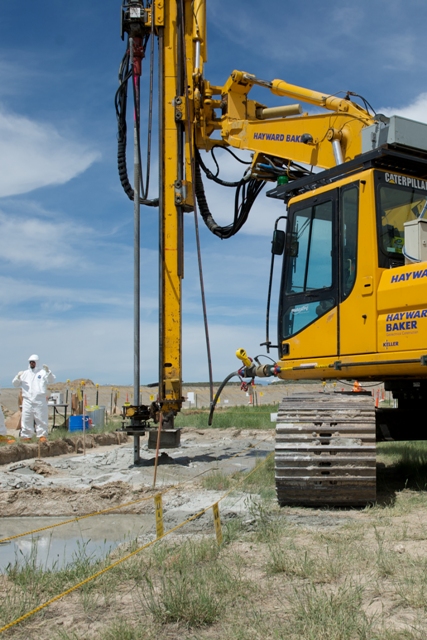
Grouting at INL

A concrete-based grout was injected into 21 locations at the Idaho site to surround buried transuranic waste, thus preventing contaminants from reaching the aquifer.